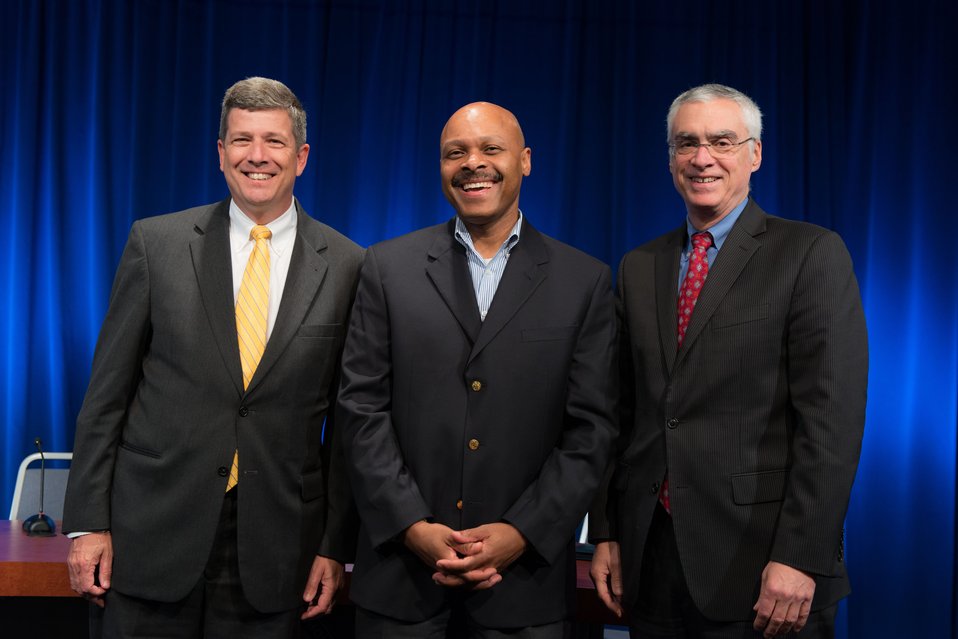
After the Twitter Town Hall

Deputy Secretary John Porcari (DOT), Deputy Secretary Maruice Jones (HUD), and Acting Administrator Bob Perciasepe (EPA)
USEPA Photo by Eric Vance. Public domain image